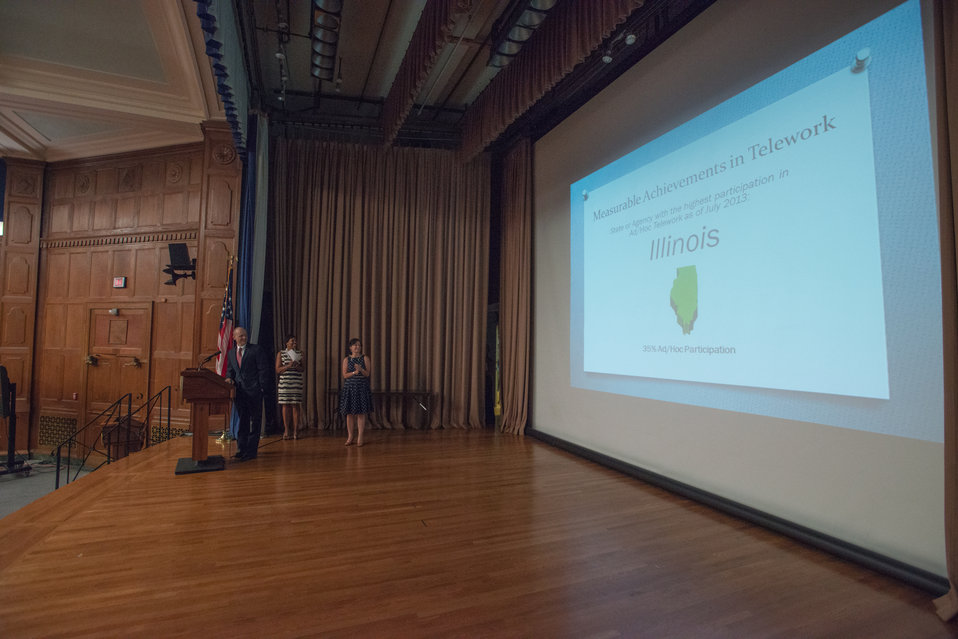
U.S. Department of Agriculture (USDA) Rural Development’s (RD) Acting Under Secretary Doug O'Brien speaks at the USDA’s RD 2nd Annual Cultural Transformation kickoff opening ceremony and forums, themed “Employees Influencing Change,” on Tuesday, Aug. 13, 2013 USDA in Washington, D.C.